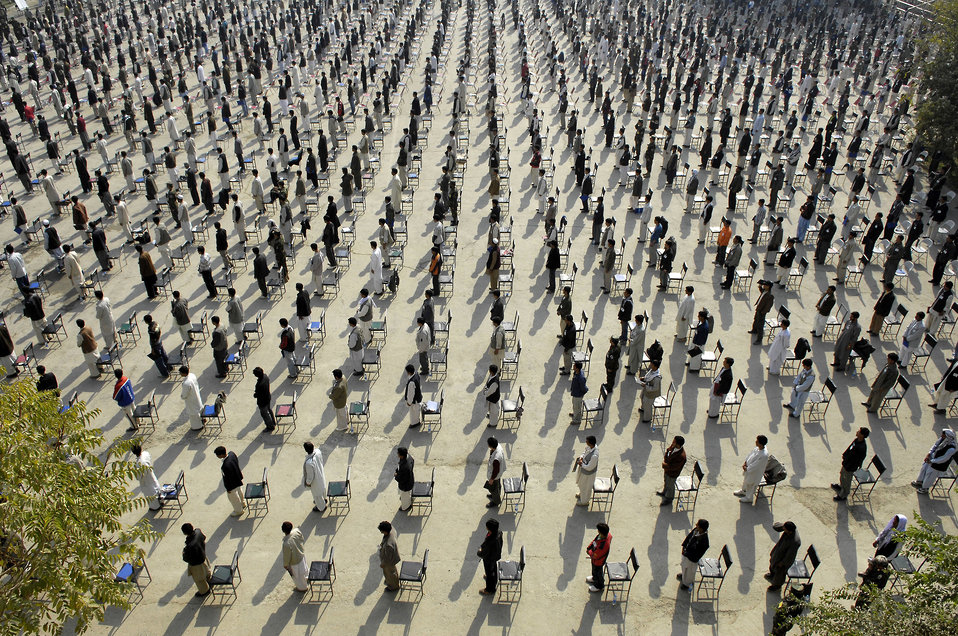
Airmen, Soldiers help establish military academy

More than 1,800 perspective cadets rise for the playing of the Afghan National Anthem before the start of the Afghan College Entrance Exam for the Afghan National Army Academy, Kabul, Afghanistan, Oct. 25. The perspective cadets here are hoping to be one of the approximately 300 chosen for the new freshman class. The exam makes up 80 percent of their final admissions score.